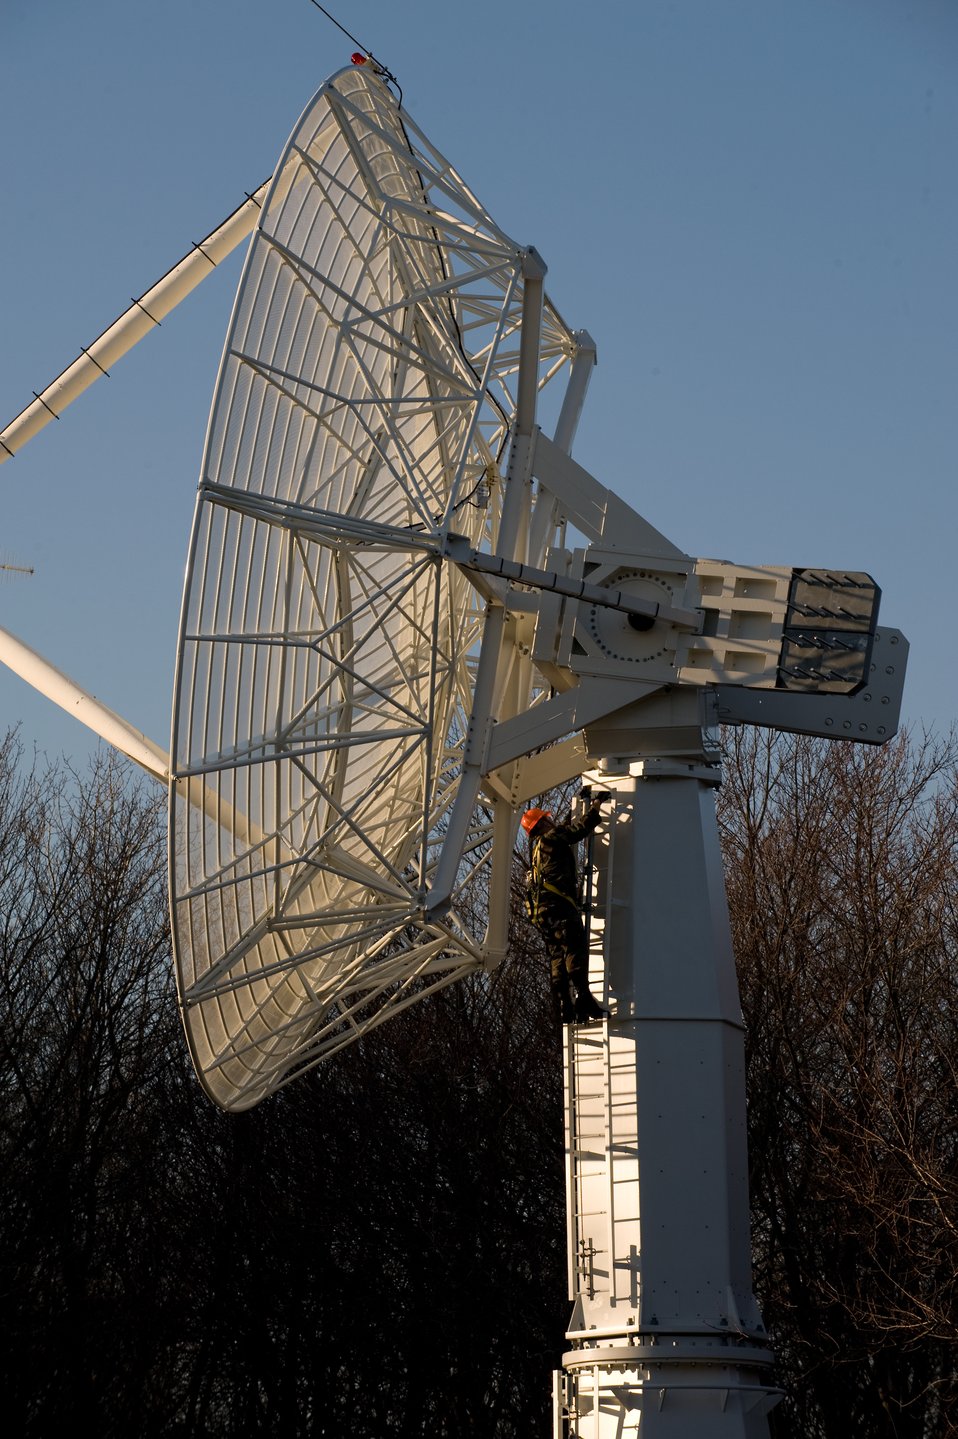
No rust here

Staff Sgt. Stephen S. Ensminger climbs up the 28-foot radio telescope antenna at the Sagamore Hill Solar Observatory, Mass., to perform a semi-annual corrosion control inspection Nov. 18, 2009. Sergeant Ensminger is a solar radio telescope technician with Det. 2 of the 2nd Weather Squadron.